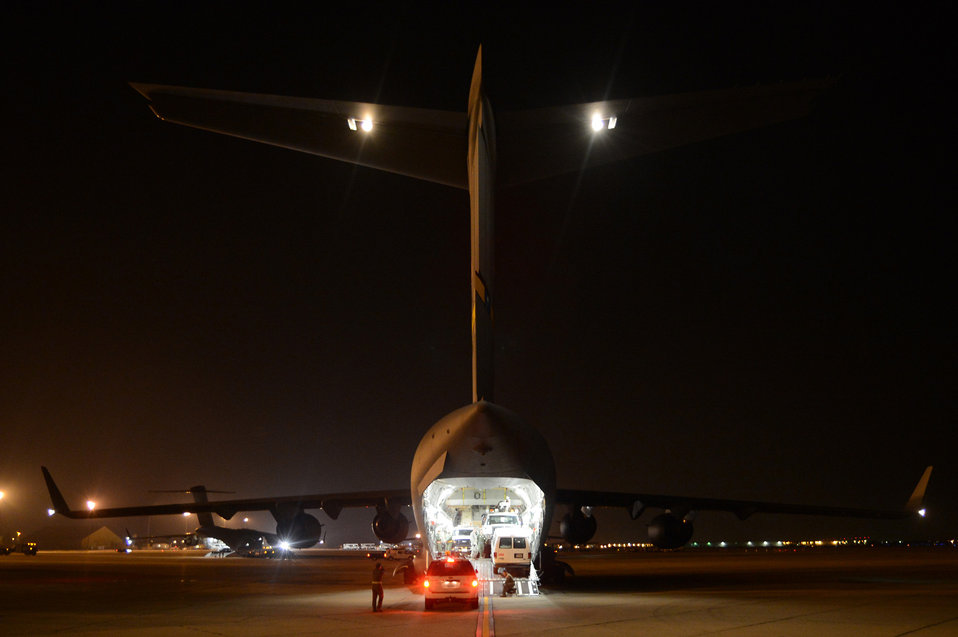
Hurricane Sandy mission

Airmen work to load utility vehicles onto a C-17 Globemaster III for transport to New York for Hurricane Sandy relief efforts Nov. 1, 2012, at March Air Reserve Base, Calif.